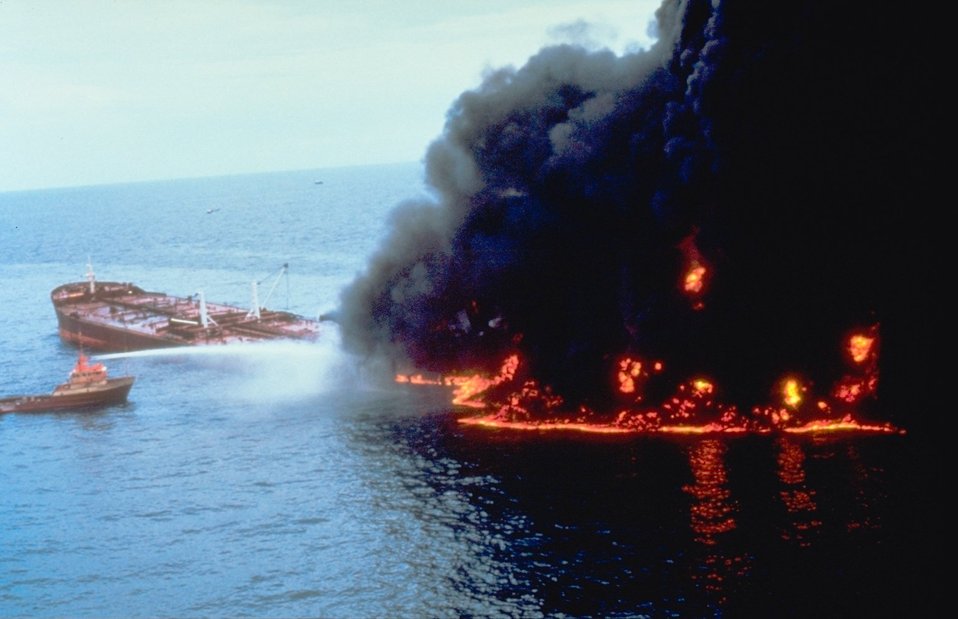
The tanker Megaborg oil spill occurred as the result of an accident during lightering operations with a subsequent fire. 5.1 million gallons of oil were released into the Gulf of Mexico.